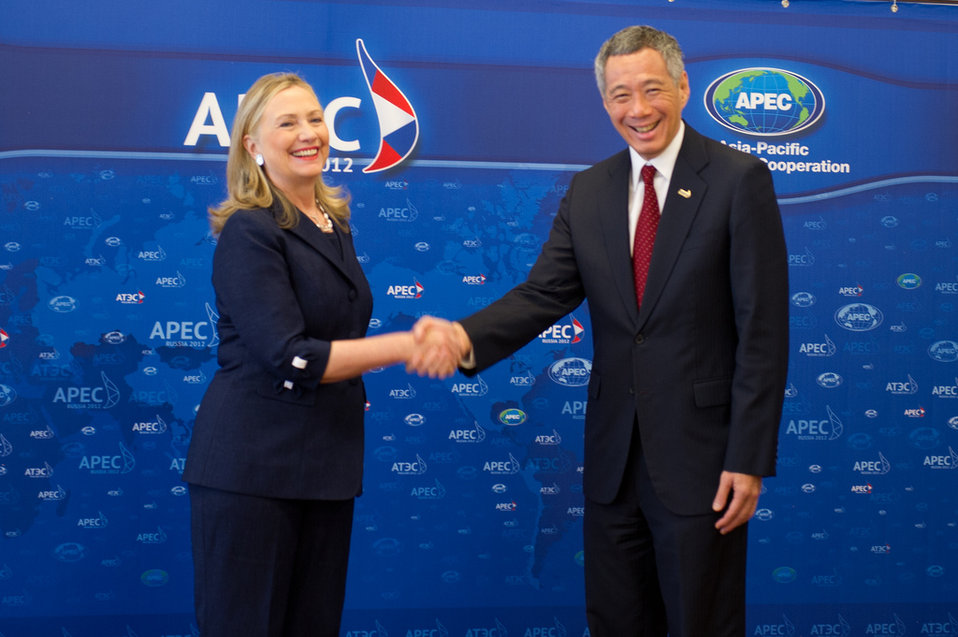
Secretary Clinton Shakes Hands With Singaporean Prime Minister Lee Hsien Loong

U.S. Secretary of State Hillary Rodham Clinton meets with Singaporean Prime Minister Lee Hsien Loong during the Asia-Pacific Economic Cooperation Leaders' Week in Vladivostok, Russia, September 8, 2012.